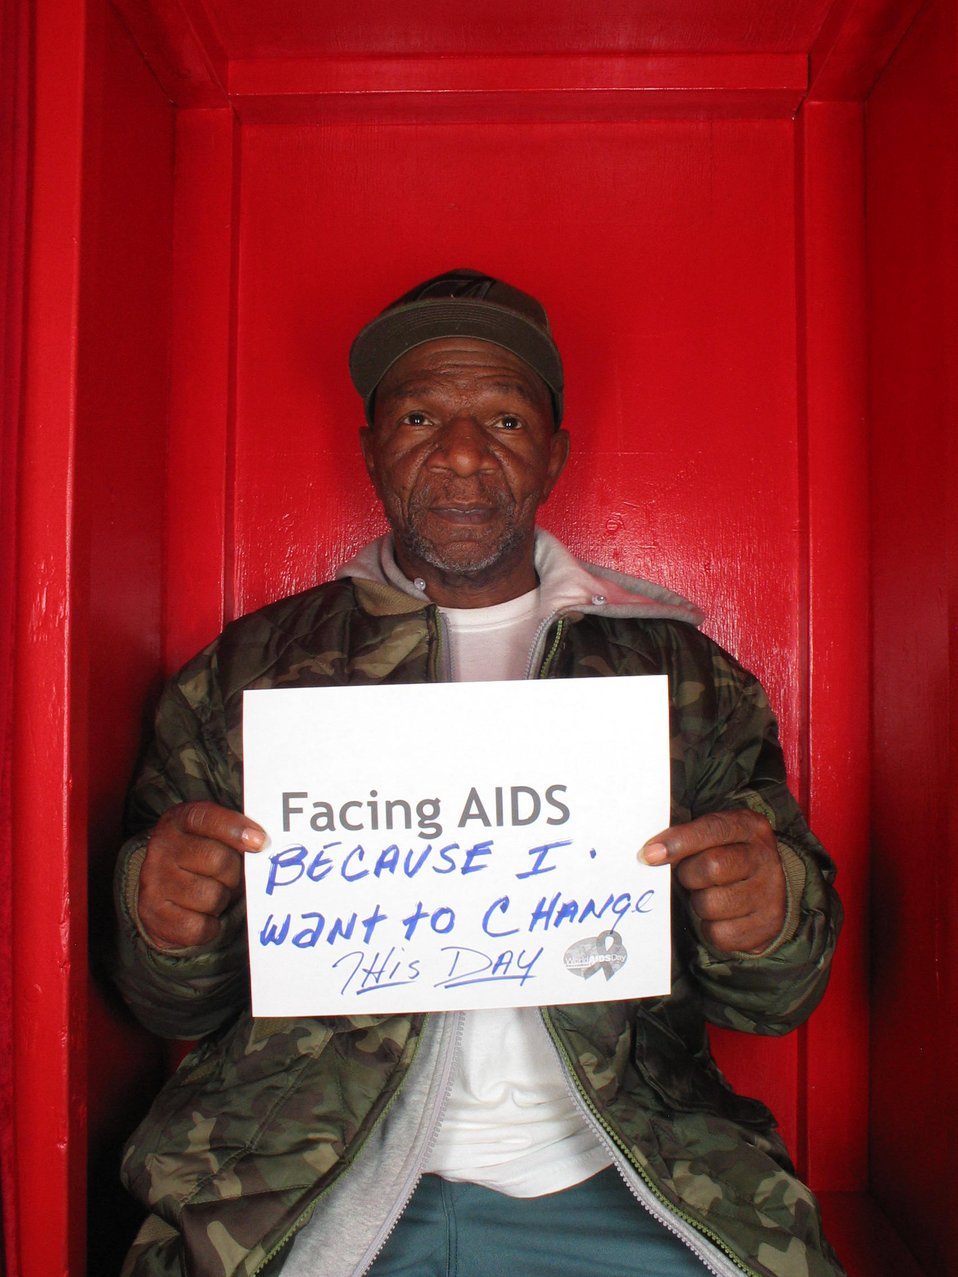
Facing AIDS because I want to change this day.